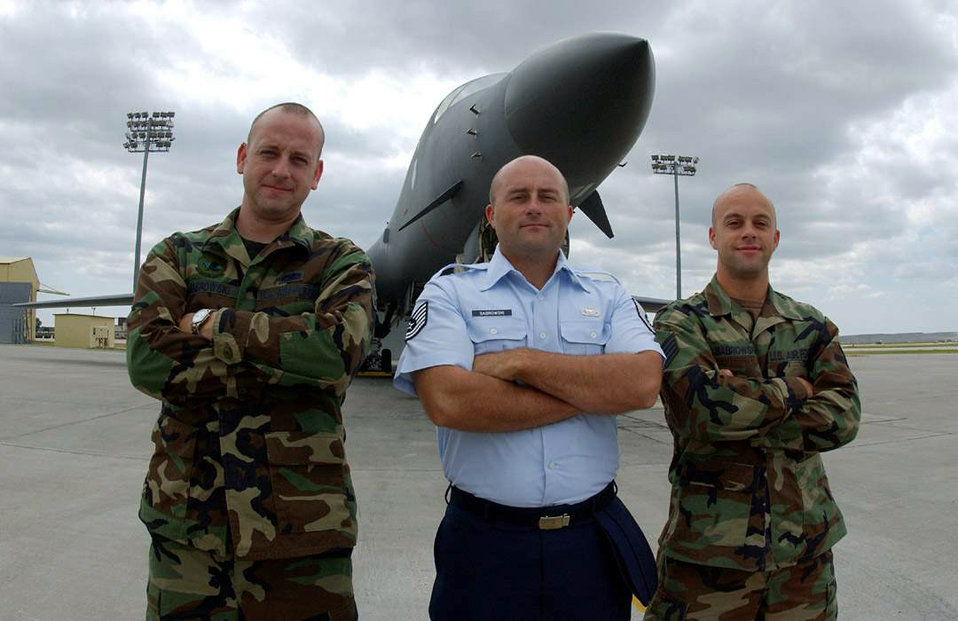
The brothers

ELLSWORTH AIR FORCE BASE, S.D. -- Senior Airman Steve Sabrowski, Tech. Sgt. Joseph Sabrowski and Staff Sgt. John Sabrowski stand before a B-1 Lancer here. The brothers are currently stationed together. Steve is a metals technology journeyman with the 28th Maintenance Squadron, Joseph is an information management craftsman for the 28th Mission Support Group, and John is an air transportation craftsman for the 28th Logistics Readiness Squadron.